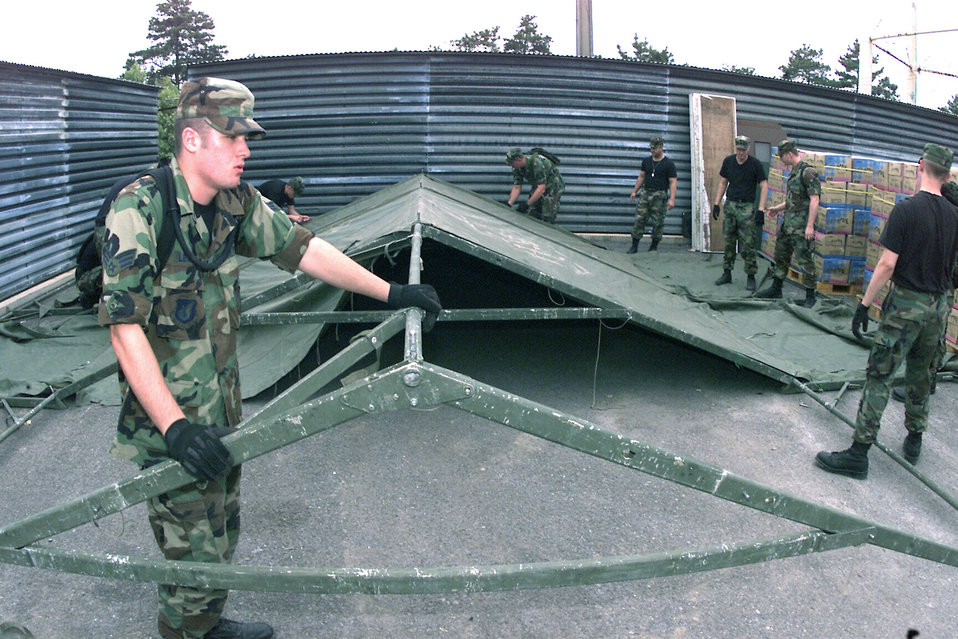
A tents situation

KWANJU AIR BASE, South Korea -- Senior Airman Arthur Lewis helps build a tent which will be used for communications equipment storage. A tent city is being prepared for the arrival of the 3rd Air Expeditionary Group. Airman Lewis is deployed from Stow, Ohio.